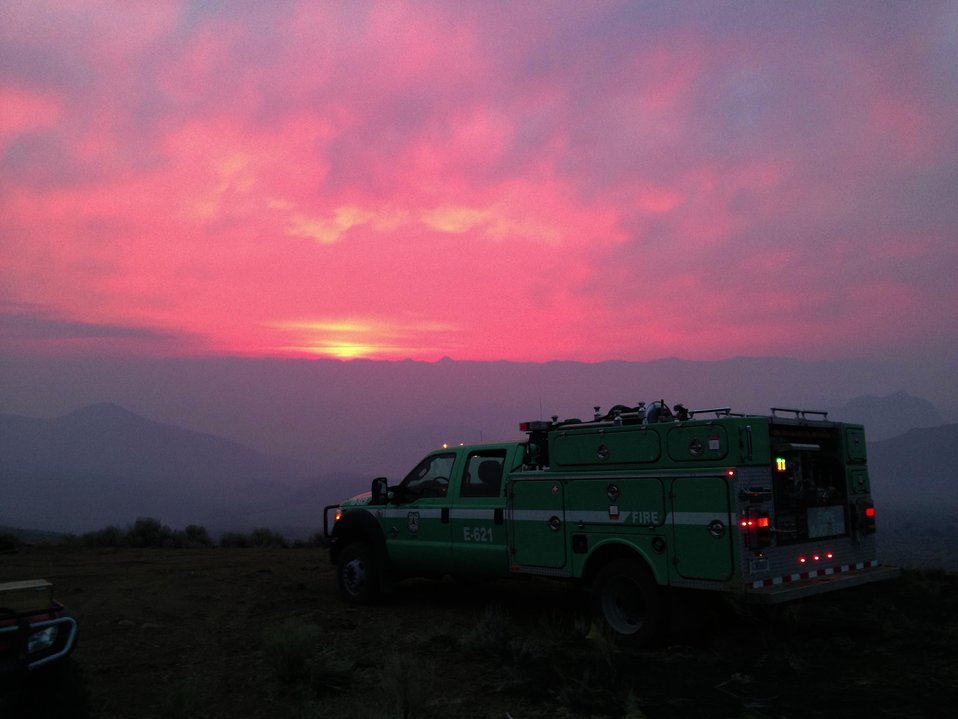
Dawn rises on Jul. 27, 2013 for fire engine 621 on the Lodgepole Fire. The Lodgepole Fire in the Salmon-Challis National Forest near Challis, ID began on Jul. 20, 2013 by lightning has consumed approximately 13,700 acres and is approximately 15% contained.